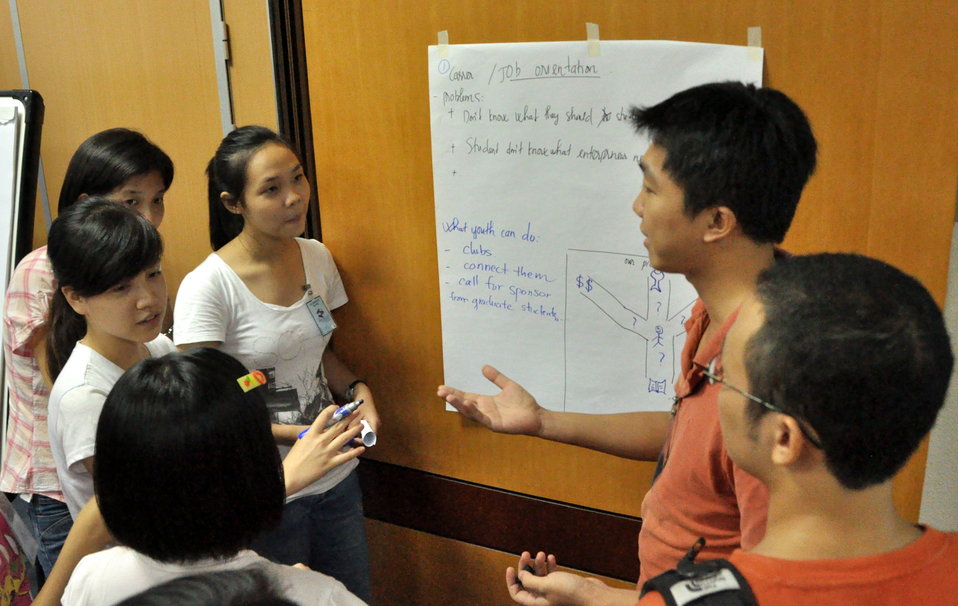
International Youth Day 2013: USAID hosts a lively discussion and group exercise on how youth can join in to advance development

Hanoi, August 12, 2013.